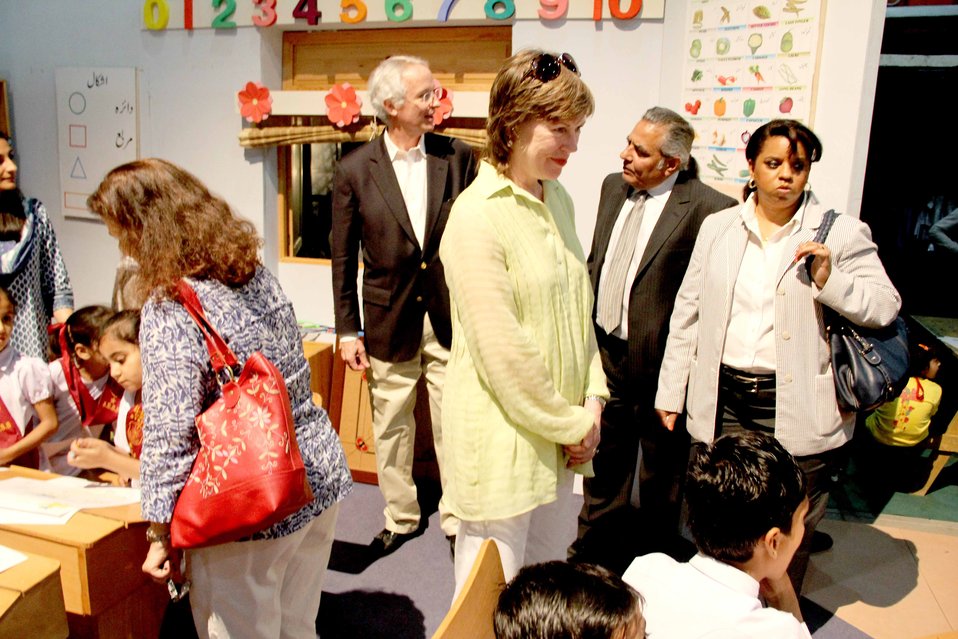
U.S. Ambassador’s Visit to Sim Sim Hamara Highlights U.S. Commitment to Improved Children’s Education in Pakistan at Lahore on 28 April, 2012

Us Official with Cameron Munter and his wife Marliy wyatt in the class room set